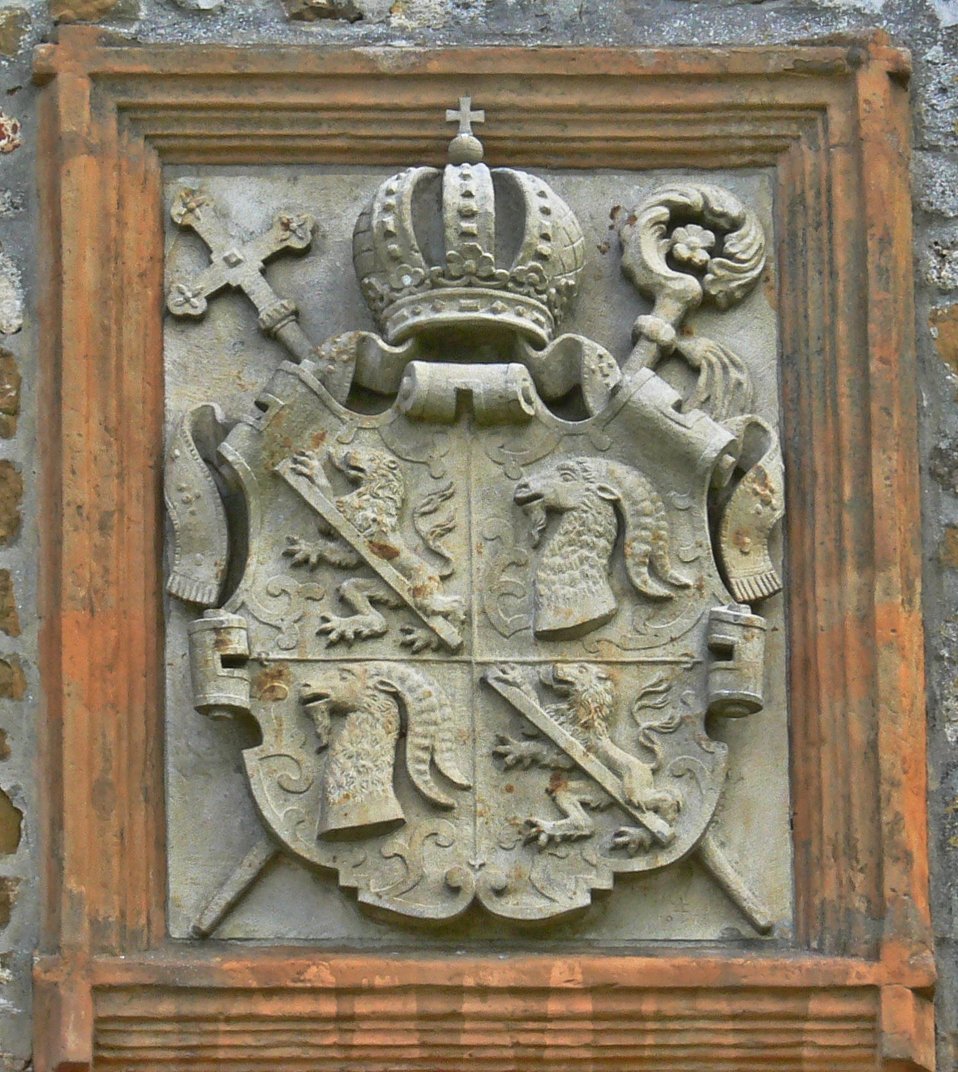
010 Gebsattel, Wappen